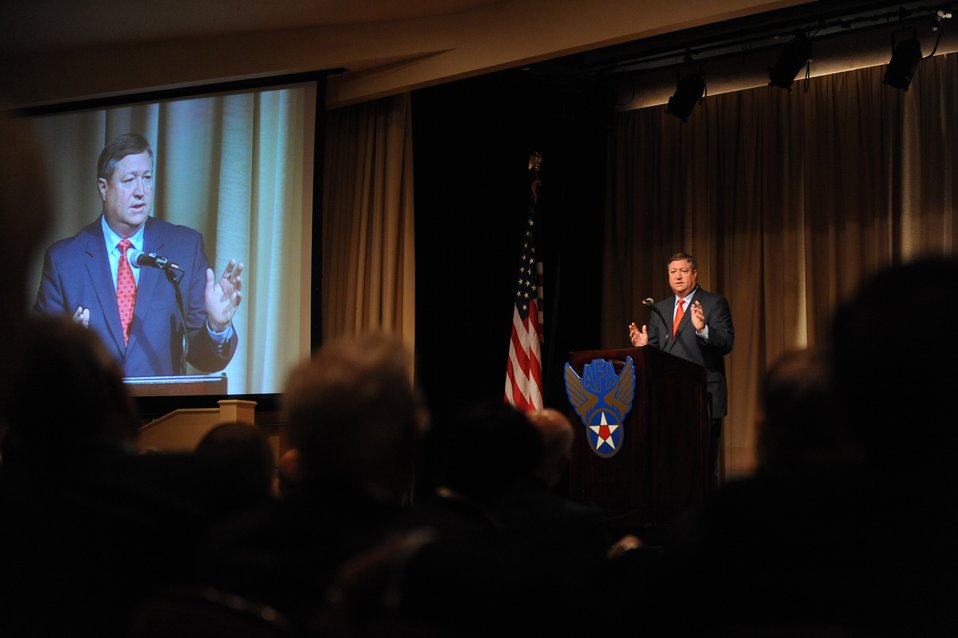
Secretary Donley speaks during Air Force Week Los Angeles

Air Force Secretary Michael B. Donley discusses the Air Force's top priorities and the way ahead for U. S. Space Command and the new Global Strike Command Nov. 21 during the Air Force Association's Global Warfare Symposium. The symposium was the culmination of Air Force Week Los Angeles, an event using various activities and exhibitions to educate the local community about the Air Force's capabilities and missions.